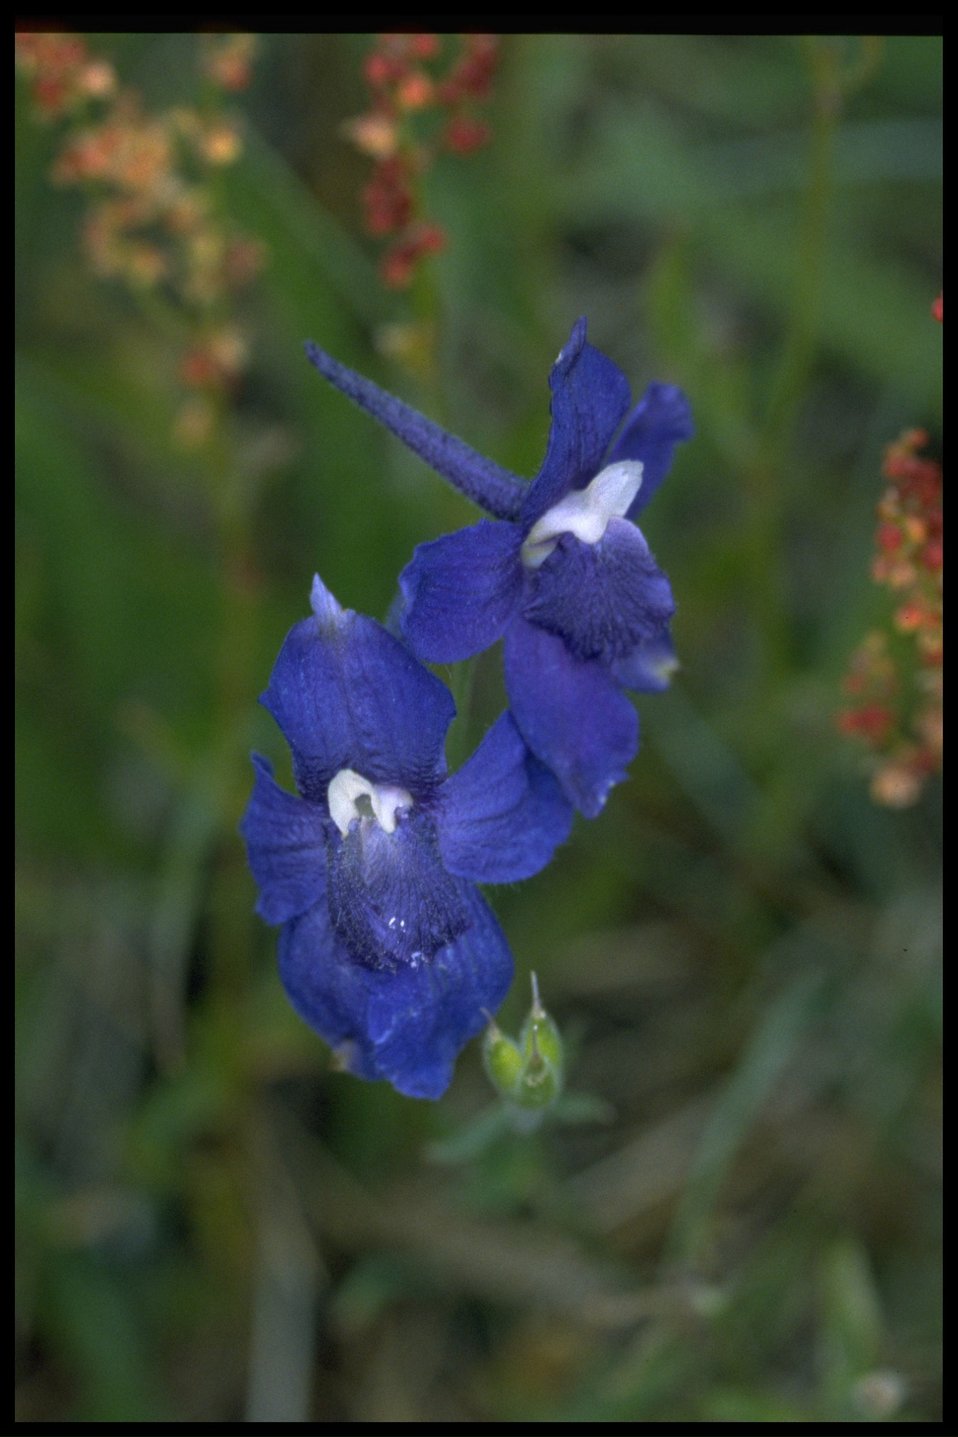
Medium shot of Delphinium and Rumex acetosella.